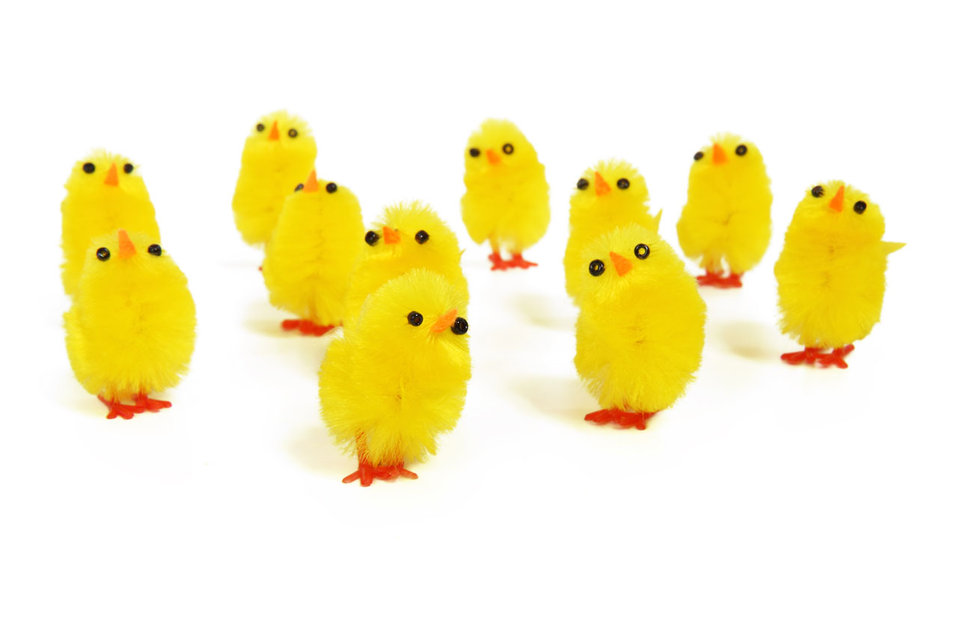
Yellow chicks

Group of chicks isolated on white background.